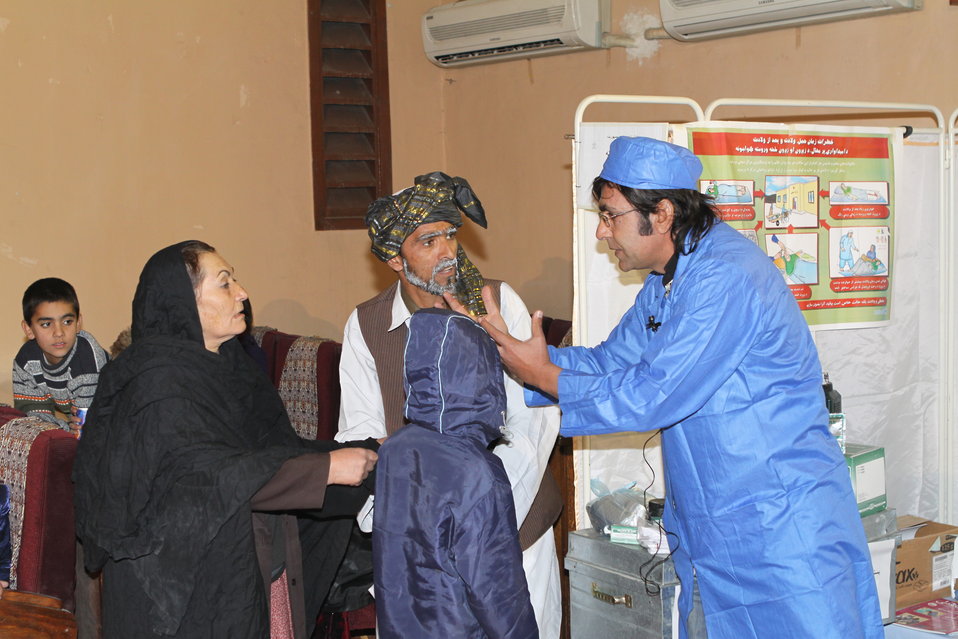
Community Health Workers Celebrated

Kabul, Afghanistan | December 5, 2010 — In support of the United Nations designated International Volunteer Day for Economic and Social Development, Afghanistan’s Ministry of Public Health celebrated its annual Community Health Worker Day today. Acting Minister of Public Health Dr. Suraya Dalil, USAID Senior Deputy Mission Director Robert Hellyer, other government officials, and international donors joined in recognizing the critical contribution of community health workers in Afghanistan and encouraging them to continue their voluntary support to their communities.
The event praised the contributions of the more than 22,000 volunteers throughout the country who deliver community level health-education, counseling, and services out of village health posts located in private homes. The Ministry of Public Health envisioned that community-based healthcare programs will actively encourage communities and families to adopt healthy lifestyles and behaviors, and provide families access to high quality and socially acceptable preventative medicine and life-saving services.
“We have 22,000 community health workers in Afghanistan that are able to implement the basic and standard medicines. They all have been trained through a job description,” said Minister Dalil. Addressing the health workers, she added, “I am proud and feel powerful that I have people like you.”
USAID-funded health projects collaborate closely with the Ministry of Public Health to improve the health and nutritional status of Afghans, provide quality primary healthcare, and promote healthy behaviors at the community and household-levels. USAID supported the training of more than 9,000 of the volunteer community health workers currently working in Afghanistan.
“On behalf of the American people, I congratulate the Community Health Workers for their diligence to gain the skills and knowledge necessary to serve their communities in this important role,” said USAID Senior Deputy Mission Director Hellyer. “USAID strongly supports community based health care and believes that quality community-based health services are essential to reaching Afghanistan’s Millennium Development Goals.”
To support the Basic Package of Health Services, USAID assisted in developing the community health worker training manual, helped train community health worker supervisors and master-trainers, facilitated in-service training, and produced and developed reporting tools, job aids, and education materials.